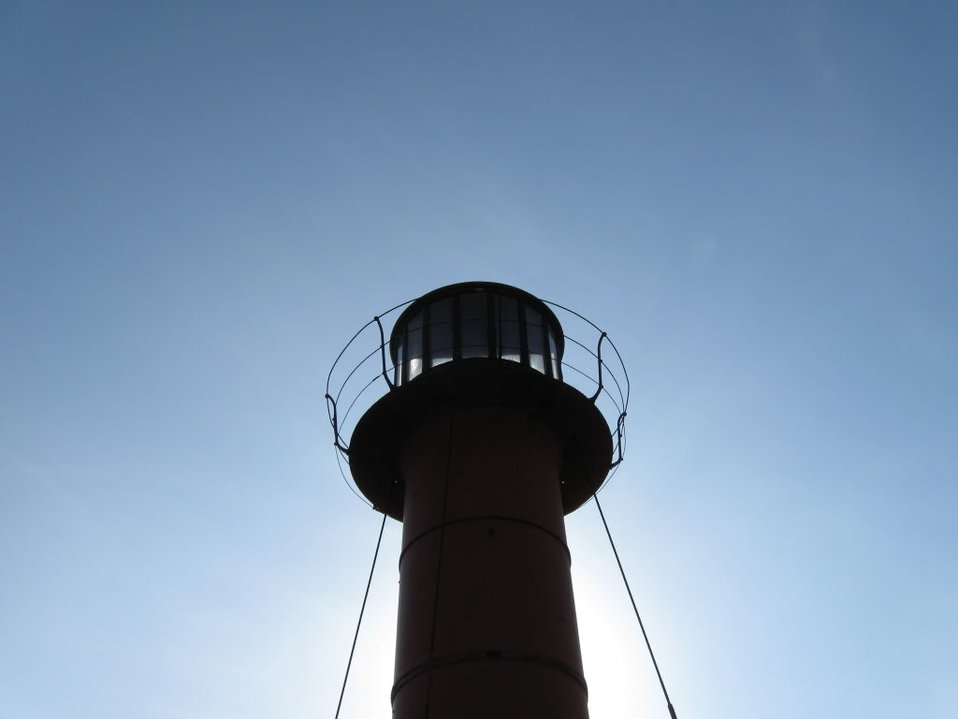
Lighthouse at Monomoy National Wildlife Refuge.

Credit: Zachary Cava/USFWS

Monomoy National Wildlife Refuge is part of the Eastern Massachusetts National Wildlife Refuge Complex.